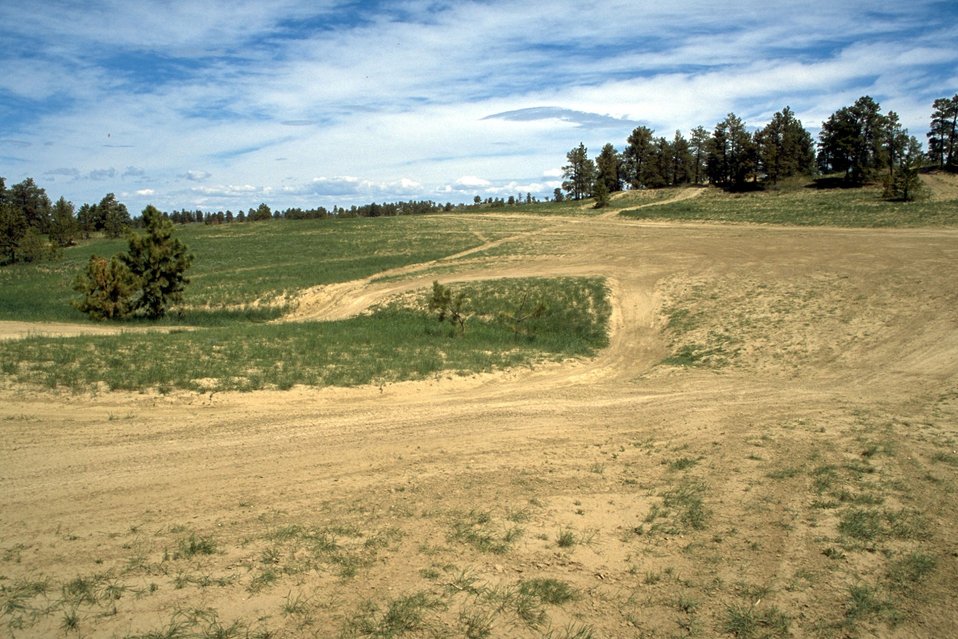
OHV trails in Area 1 of the Shepherd Recreation Area